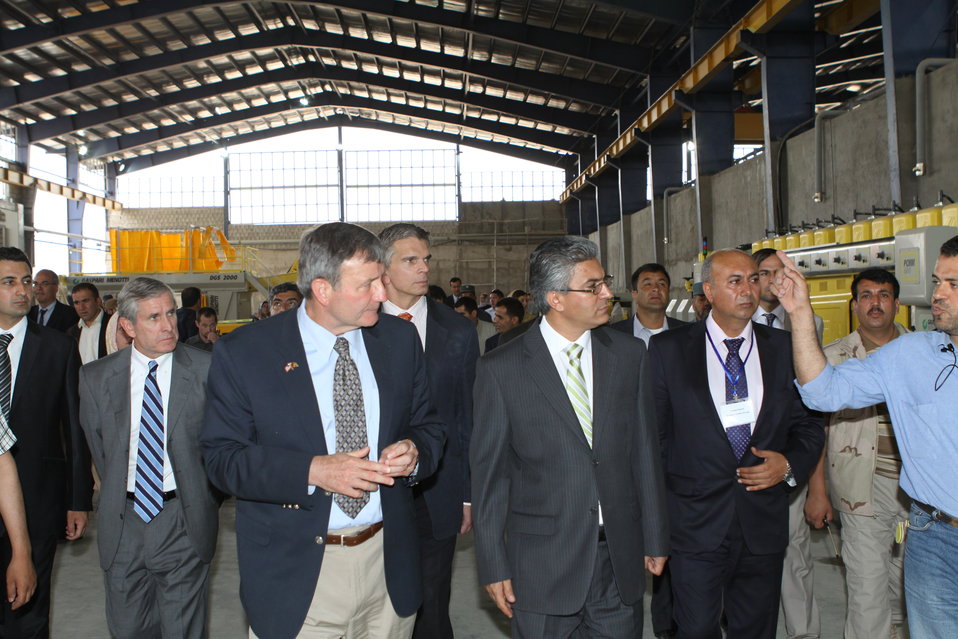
100525 Hirat Marble Conference 405